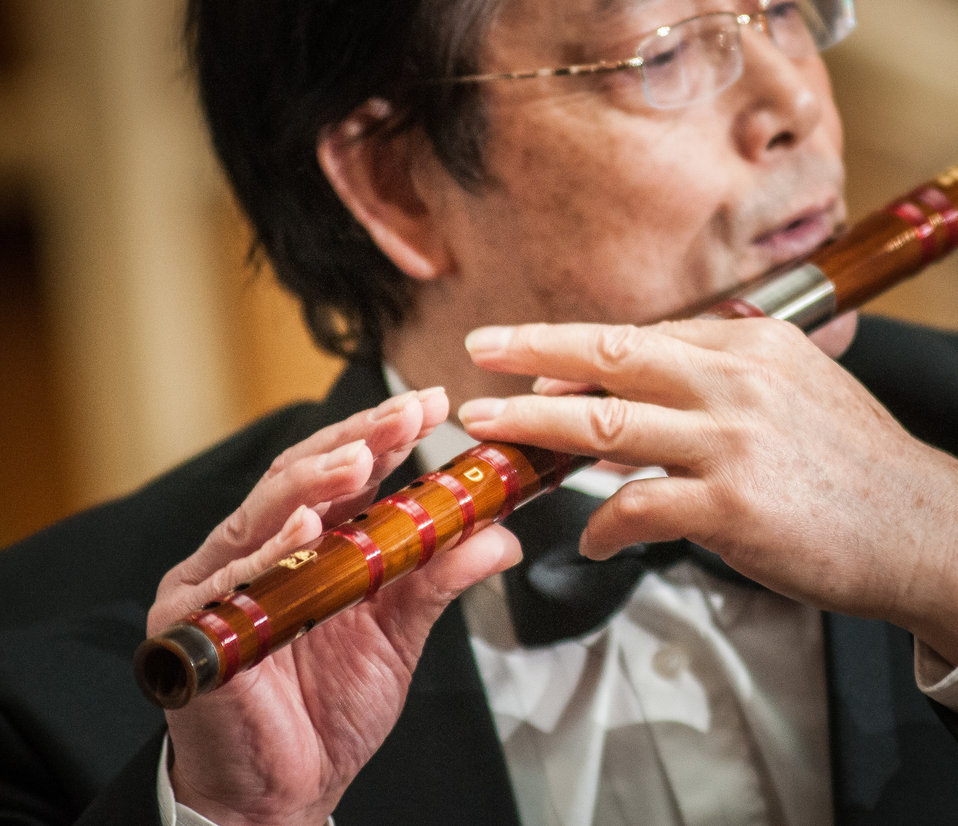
The Washington Chinese Traditional Orchestra Ensemble performs 'Melody of Purple Bamboo,' 'Jasmine Flower,' and 'Joys of Beaming,' during the U.S. Department of Agriculture (USDA) Asian Pacific American Heritage Month Observance, at the USDA headquarters, Whitten Building patio, in Washington, D.C., on Thursday, May 23, 2013. This year’s theme is “Building leadership; Embracing the Cultural Values and Inclusions.”